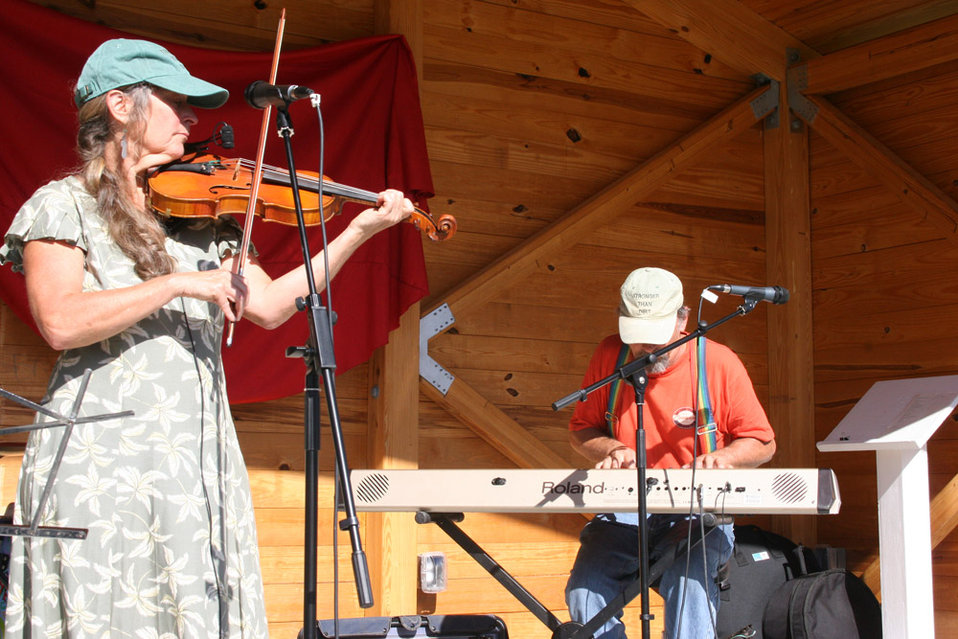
Freshwater Folk Festival

The 5th Annual Freshwater Folk Festival at White Sulphur Springs National Fish Hatchery in West Virginia.Credit: USFWS